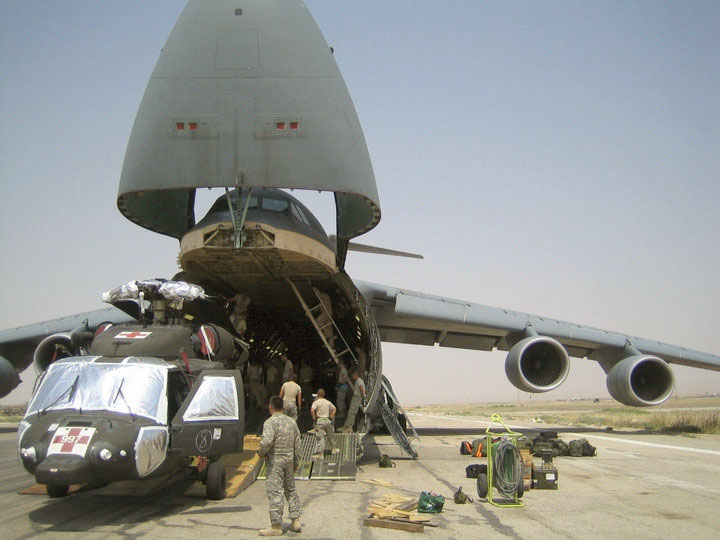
C-5s support Afghanistan troop surge

C-5 aircrews from the Air Force Reserve's 709th Airlift Squadron and the active Air Force's 9th AS at Dover Air Force Base, Del., spent June 15, 2010 through July 15, 2010 overseas supporting the troop surge by delivering 4 million pounds of cargo to various locations in Afghanistan.